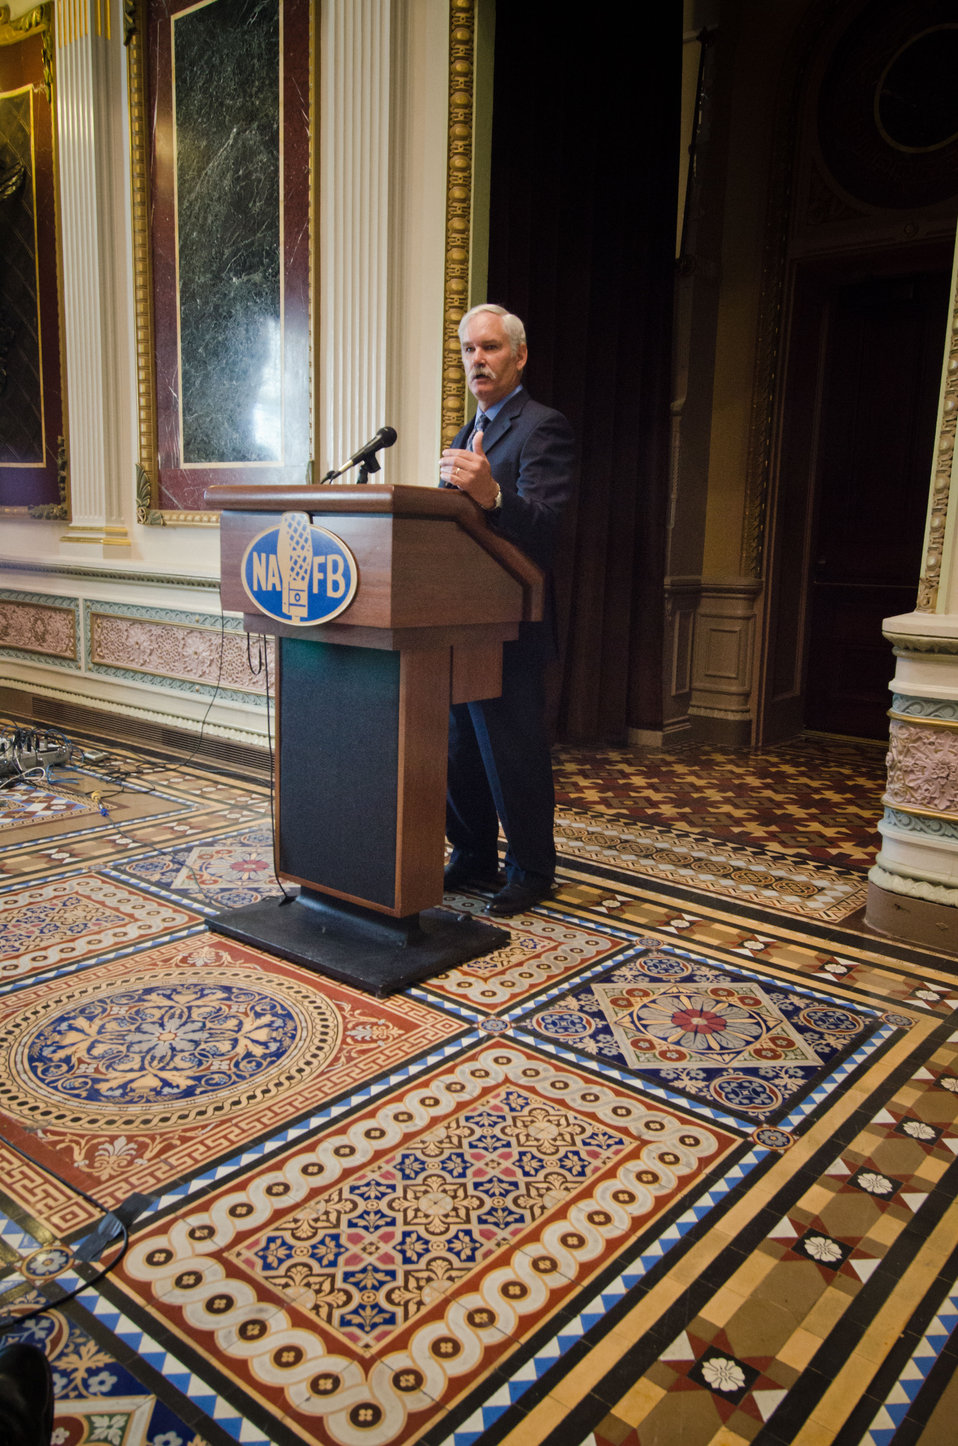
Farm and Foreign Agriculture Services Acting Under Secretary Michael Scuse spoke about American production agriculture at the spring National Association of Farm Broadcasters (NAFB), “Washington Watch” member retreat in Washington, D.C. This year the meeting was held in the Eisenhower Executive Office Building, Indian Treaty Room Tuesday, April 24, 2012 featuring United Sates Department of Agriculture and Obama Administration officials. This opportunity provides an occasion to highlight efforts to rebuild and revitalize rural America, including efforts for the agricultural community. NAFB is the recognized and trusted source of agricultural and rural lifestyle information for America with approximately 200 members who broadcast via radio in nearly every state in the country.